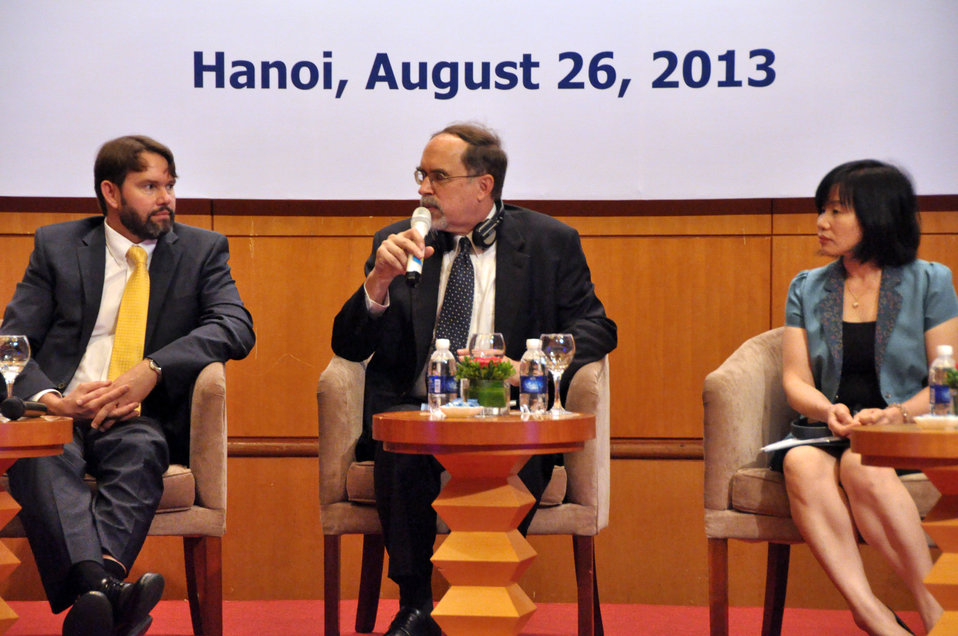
USAID's Support for Trade Acceleration Project (USAID STAR Plus) Closing Ceremony

Hanoi, August 26, 2013.